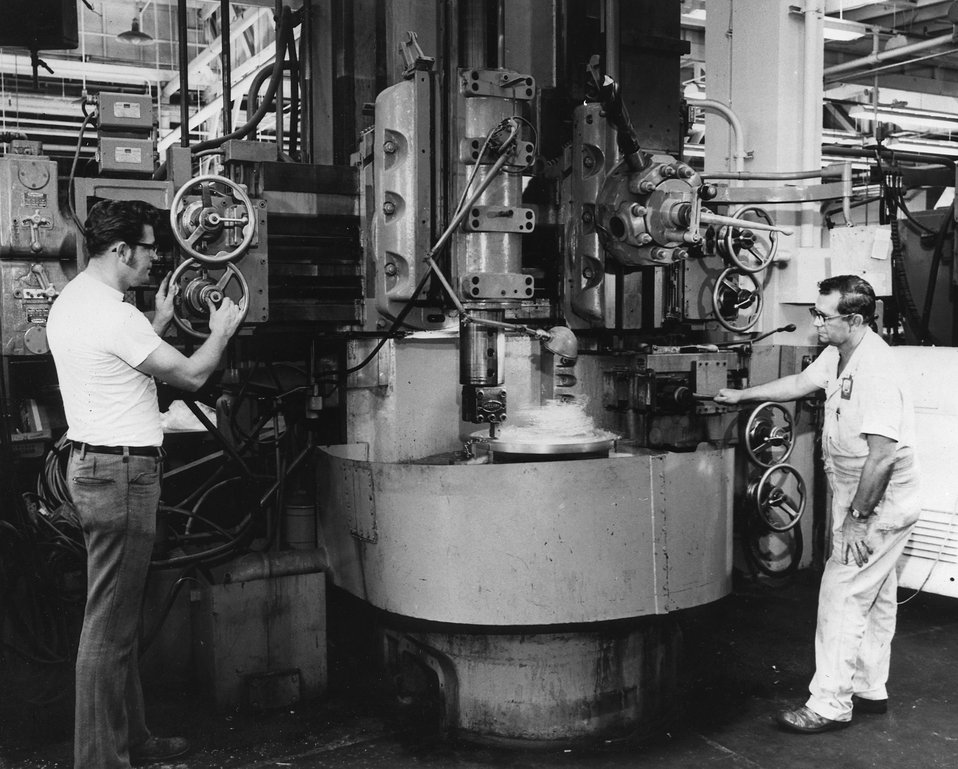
The Training and Technology program at the Atomic Energy Commission's Oak Ridge Y-12 Plant has graduated thousands of students since its beginning in 1966. c. 1973